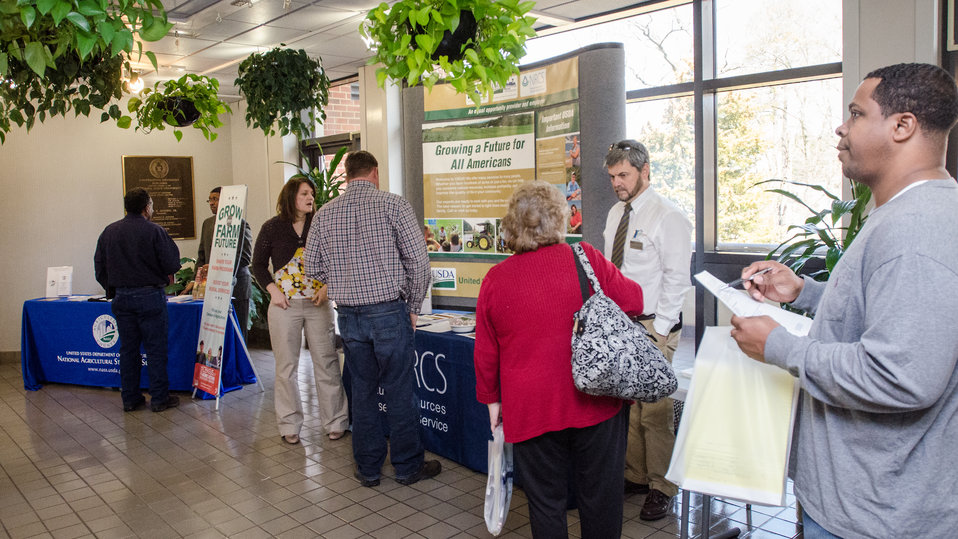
Staffers and farmers came together for the “Virginia State University (VSU), U.S. Department of Agriculture (USDA) and Virginia Farmers Working Together” outreach workshop in the VSU, L. Douglas Wilder building on Thursday, March 7, 2013, in Petersburg, VA. Farmers shared and learned new ways to do more with USDA services, and how to apply for programs that will help grow their business.